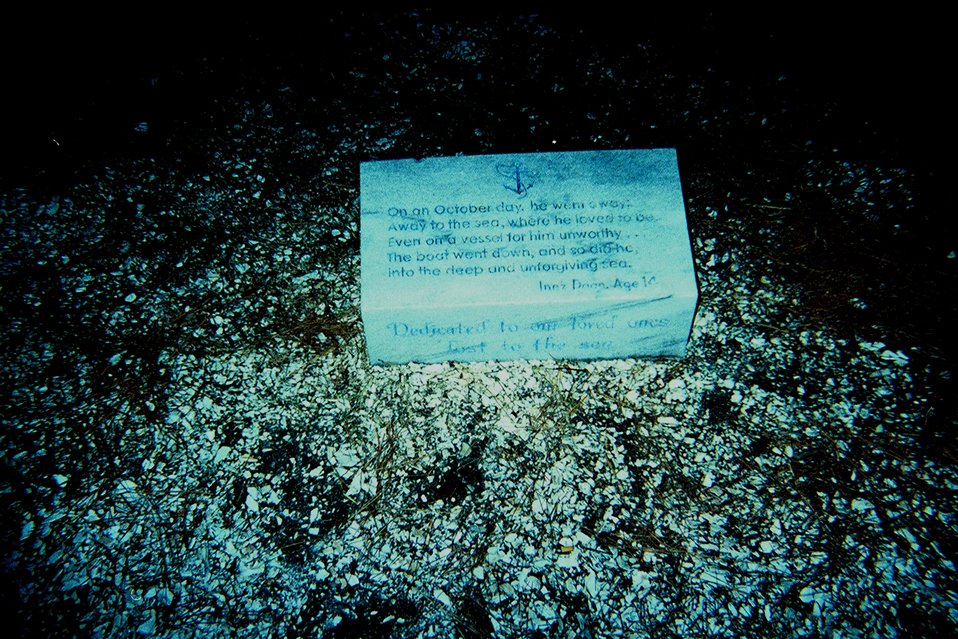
A poignant reminder of the dangers of the sea. A sailor's memorial placed near Assateague Light House.